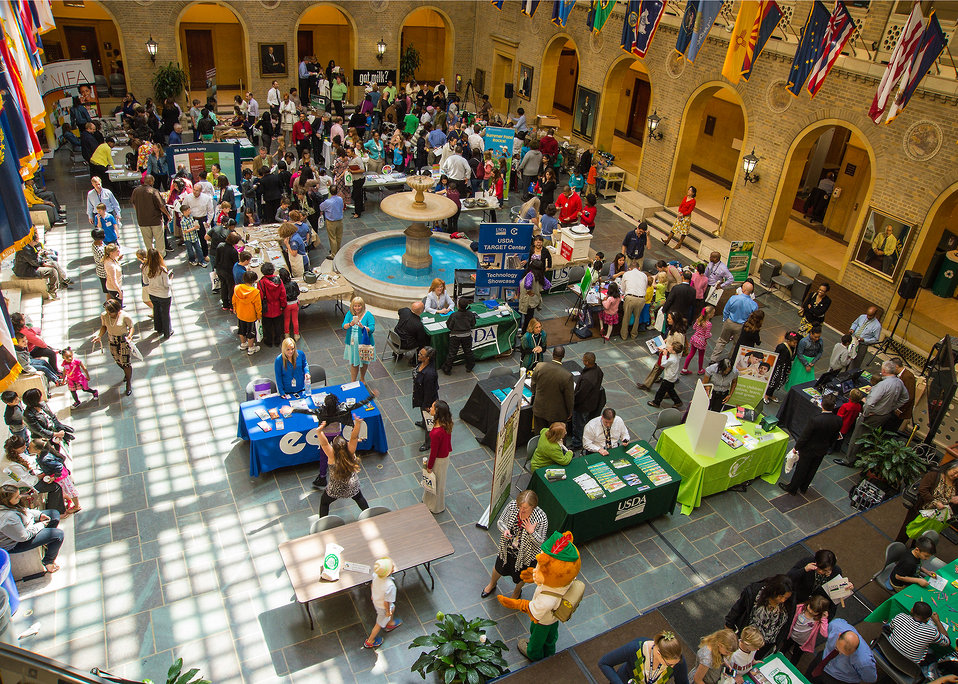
The U.S. Department of Agriculture (USDA) held its annual “Bring Your Daughters and Sons to Work on Thursday, Apr. 24, 2014 in Washington, D.C. The event offers employees the opportunity to bring their children to work to experience what they do in their profession and offer insight into other careers at the Department of Agriculture.